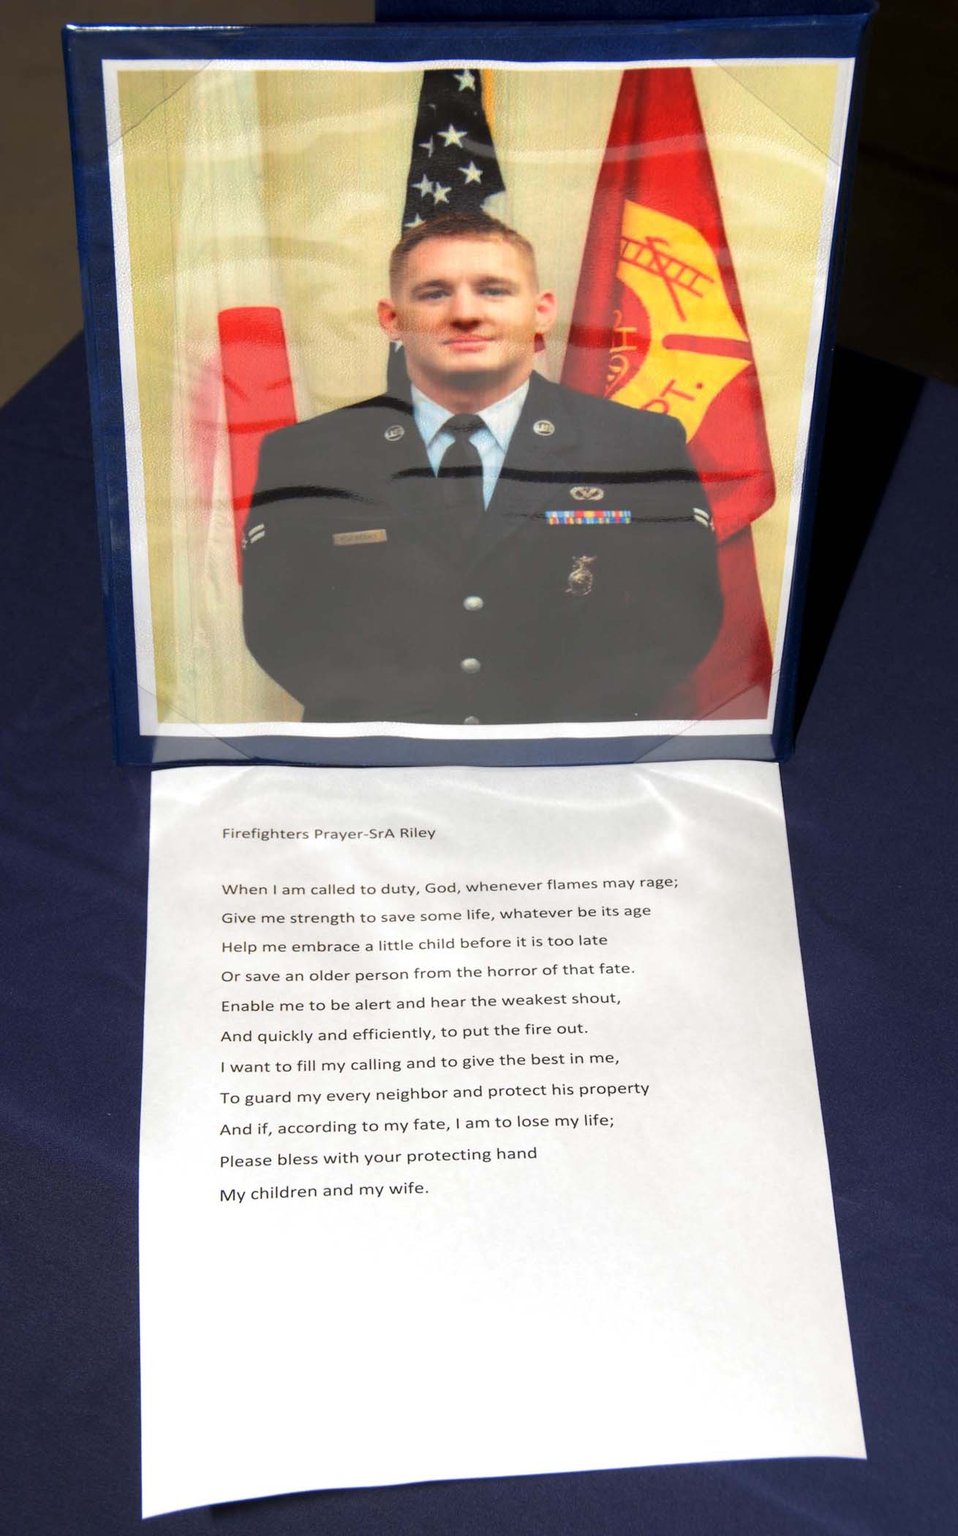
Airman Kozorosky deployed memorial

The Firefighter's Prayer is displayed by a photo of Senior Airman Derek Kozorosky (then-Airman 1st class), during Airman Kozorosky's memorial service Feb. 16, 2011, in Southwest Asia,. Airman Kozorosky died Feb. 11, 2011, after a vehicle incident at Kadena Air Base, Japan.